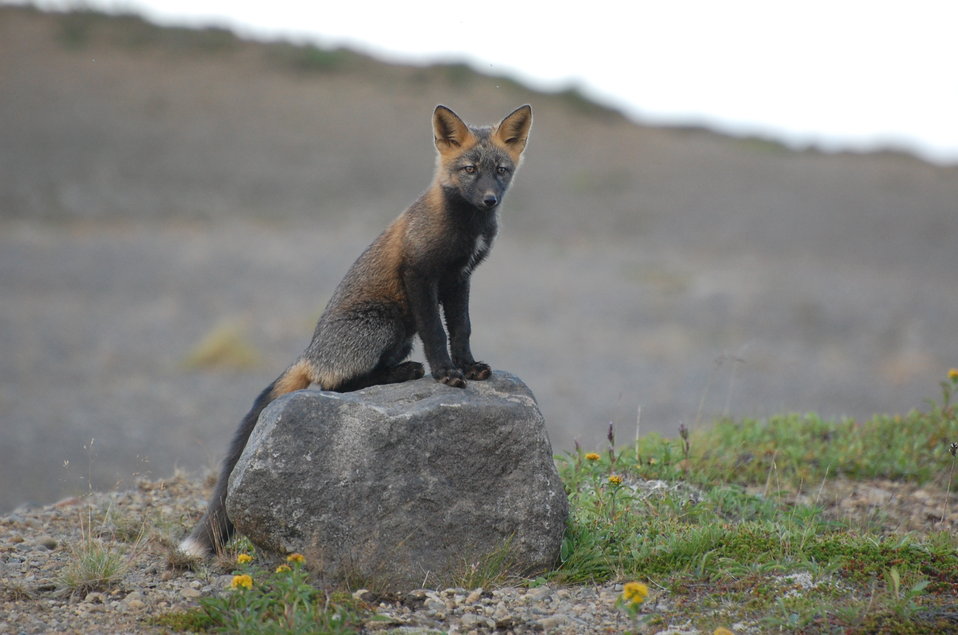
Red Fox kit

near Outer Marker, Izembek National Wildlife Refuge